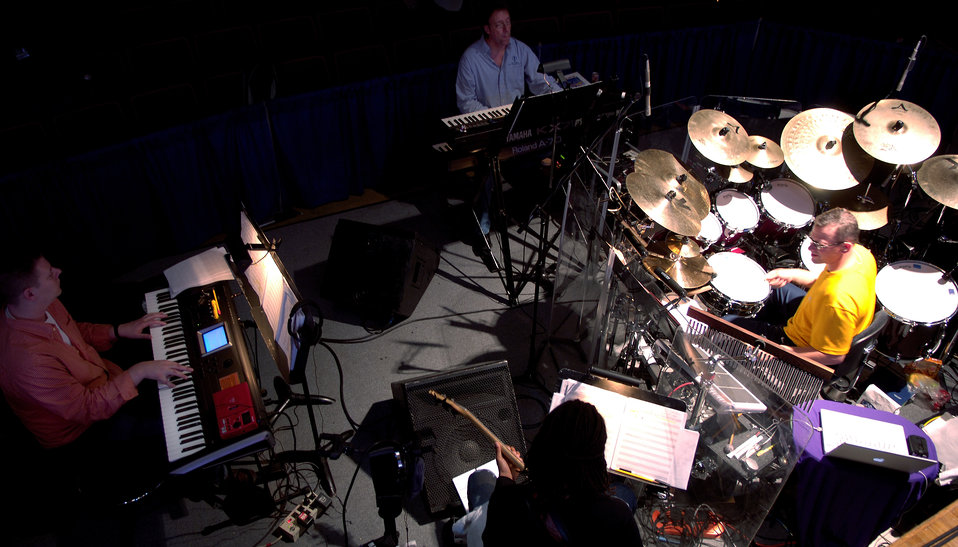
Tops In Blue

LACKLAND AIR FORCE BASE, Texas (AFPN) -- The Tops In Blue band rehearses before final auditions at the Air Force Worldwide Talent Contest. Tops In Blue officials held auditions here from Nov. 5 to Nov. 14, searching for individuals to perform on the 2006 Tops In Blue team.